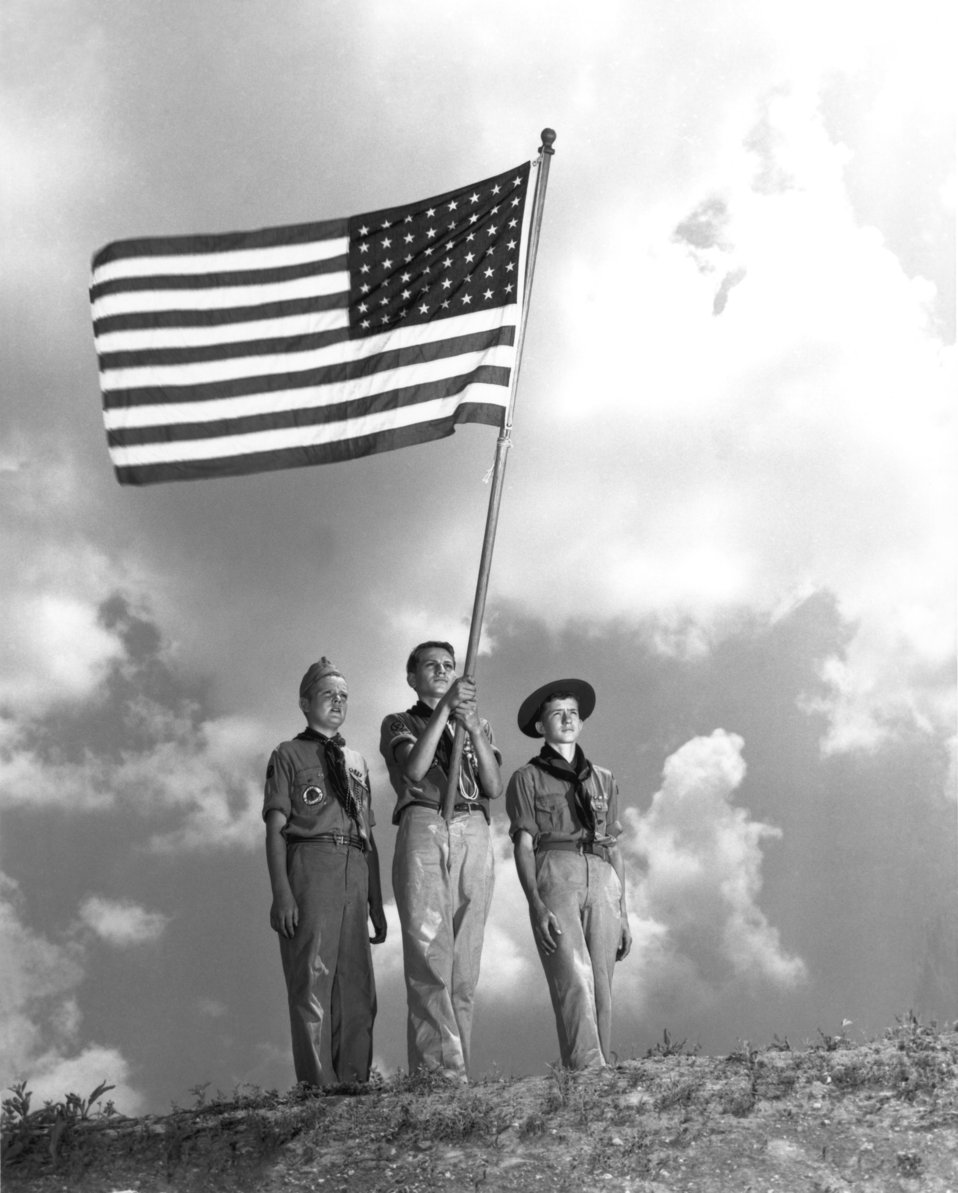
Boy Scouts Oak Ridge

1800 DOE photo by Ed Westcott

Boy Scouts Oak Ridge Tennessee 6-26-1946